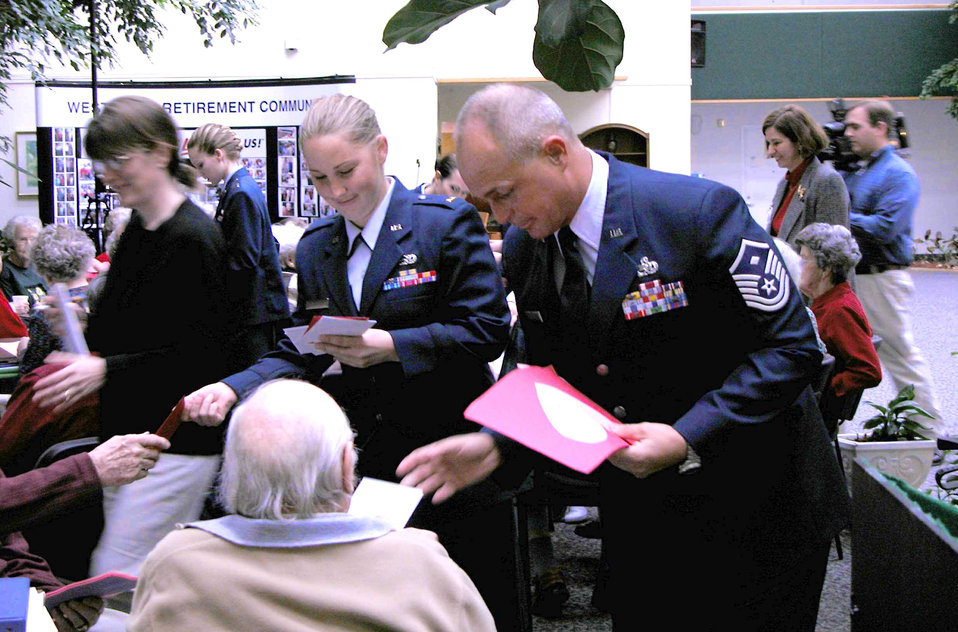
Handing out valentines

FORT WALTON BEACH, Fla. -- Volunteers from Eglin Air Force Base hand out valentines to veterans in a local assisted-living residence. Part of the